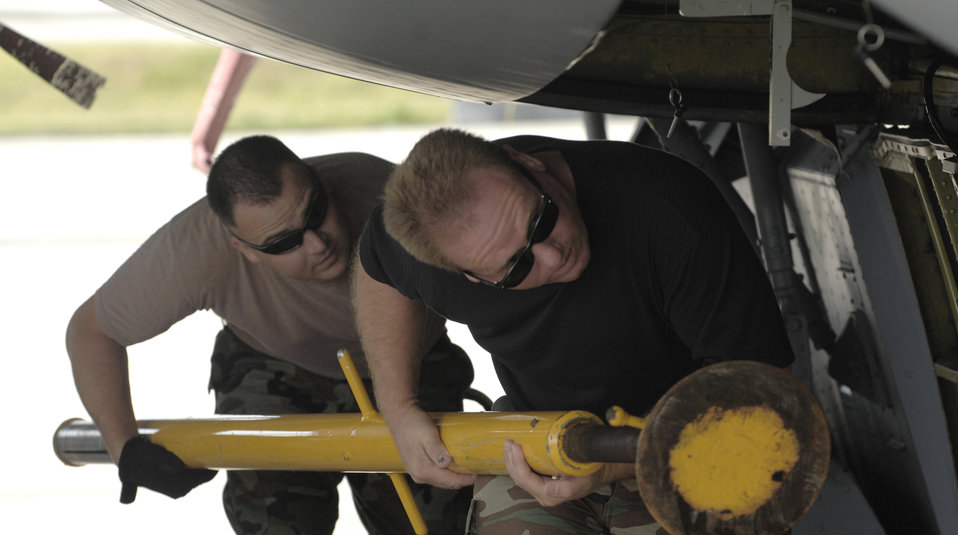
Reserve Airmen complete deployment to Guam

Tech. Sgt. Mike Harlow and Senior Airman Aaron Preston move a cargo loading stand April 29 at Andersen Air Force Base, Guam. Sergeant Harlow and Airman Preston are KC-135 Stratotanker crew chiefs from the 434th Air Refueling Wing from Grissom Air Reserve Base, Ind.